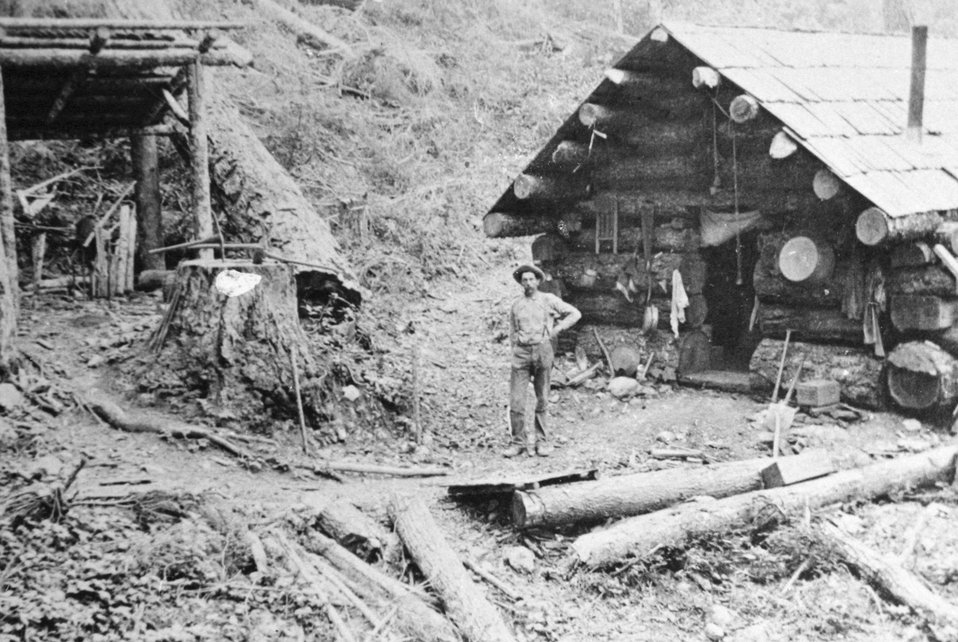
Mining Camp on the Rogue River C. 1915